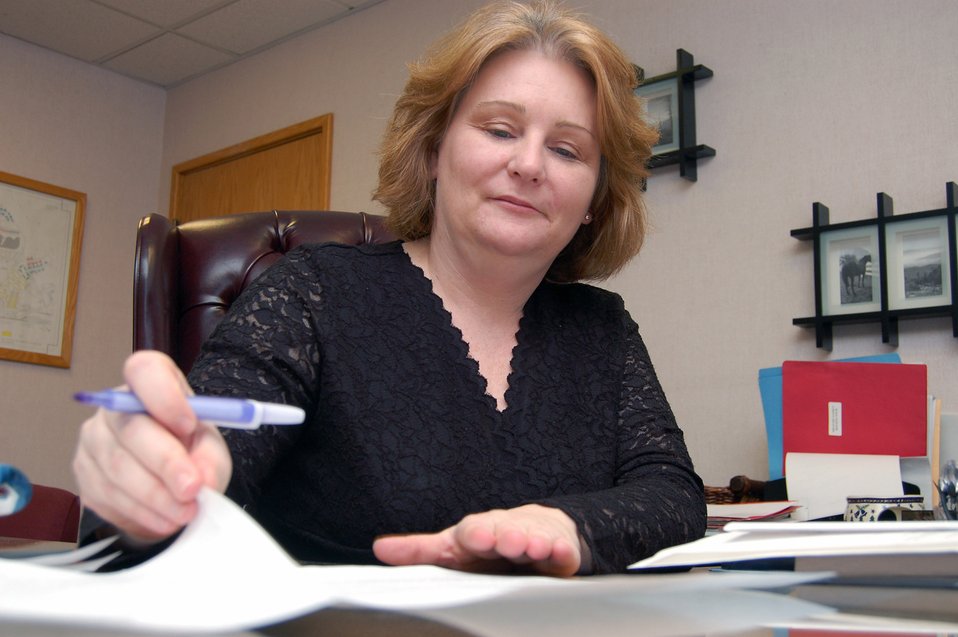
Eielson helps Airmen move into new homes in a hurry

Lorie Dallas looks over some paperwork on the Fiscal 2006 Replacement Family Housing Project Feb. 27 at Eielson Air Force Base, Alaska. As the chief of the housing office at Eielson, Ms. Dallas was in charge of moving 300 Air Force families out of privatized housing into new housing over a four-month period from September to December. The reason for the move was due to a conclusion of a privatized housing contract that wasn't able to be renegotiated.